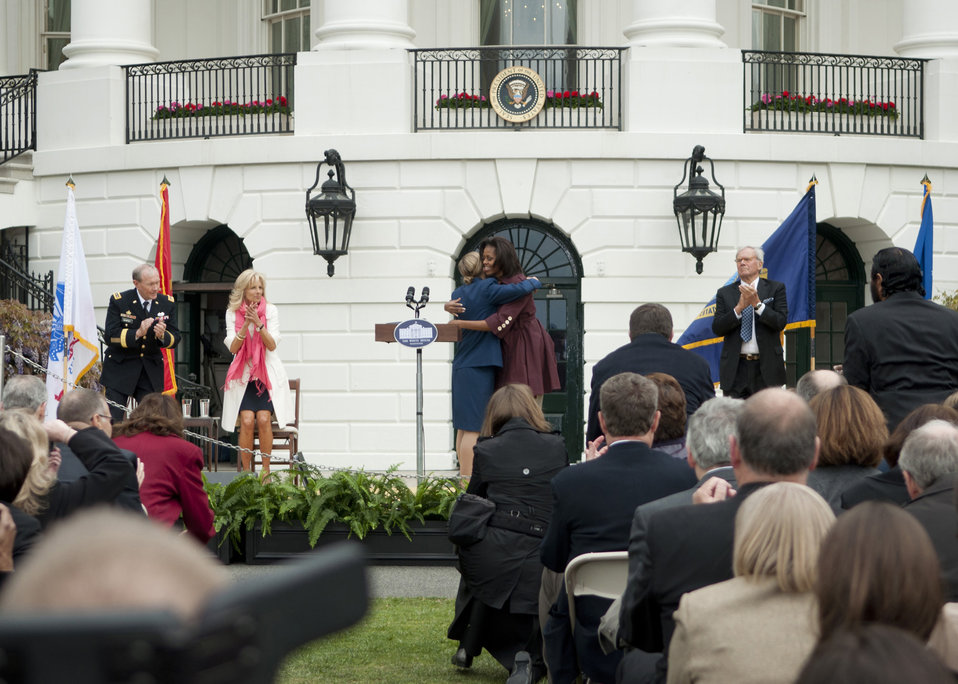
White House marks first Joining Forces anniversary

Cadet Staff Sgt. Moranda Hern, Air Force Academy sophomore, receives a hug from First Lady Michelle Obama after Hern spoke at the first anniversary of Joining Forces ceremony on the south lawn of the White House April 11, 2012. Also on stage were Chairman of the Joint Chiefs of Staff U.S. Army Gen. Martin E. Dempsey; Jill Biden, the vice-president’s wife; and Tom Brokaw, television journalist. Hern was one of the 20 finalists in the Joining Forces Community Challenge that recognized citizens, communities and organizations for their efforts in supporting military families. Hern was one of the 20 finalists in the Joining Forces Community Challenge for starting the Sisterhood of the Traveling BDUs organization that aims to help daughters ages 13-18 of military members connect and build relationships. The challenge was part of the Joining Forces program, pioneered by First Lady Michelle Obama and Jill Biden, which is a national initiative that mobilizes all sectors of society to support military members and their families.